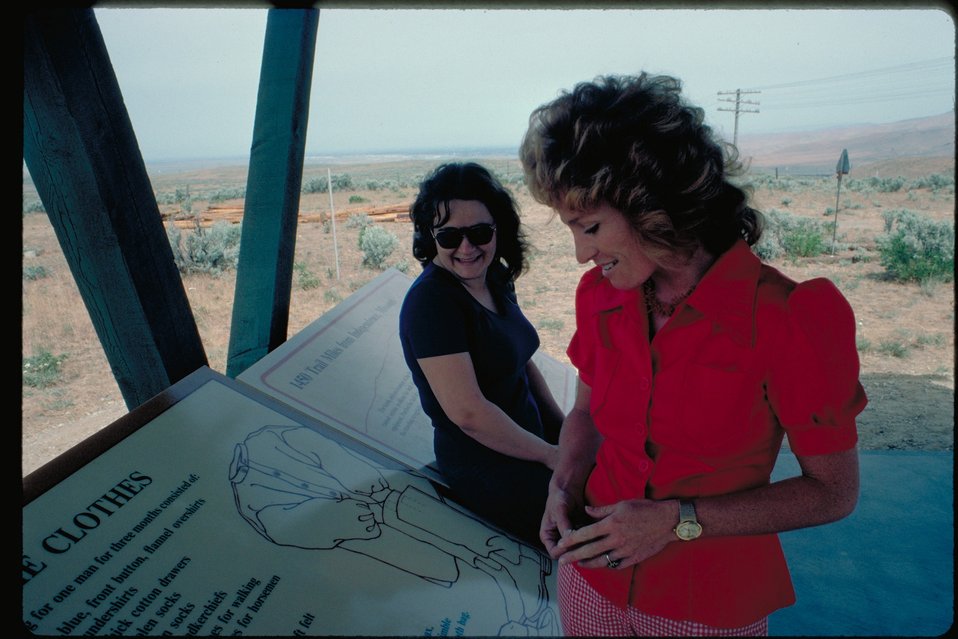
Oregon Trail Bonneville Point Lower Snake River District